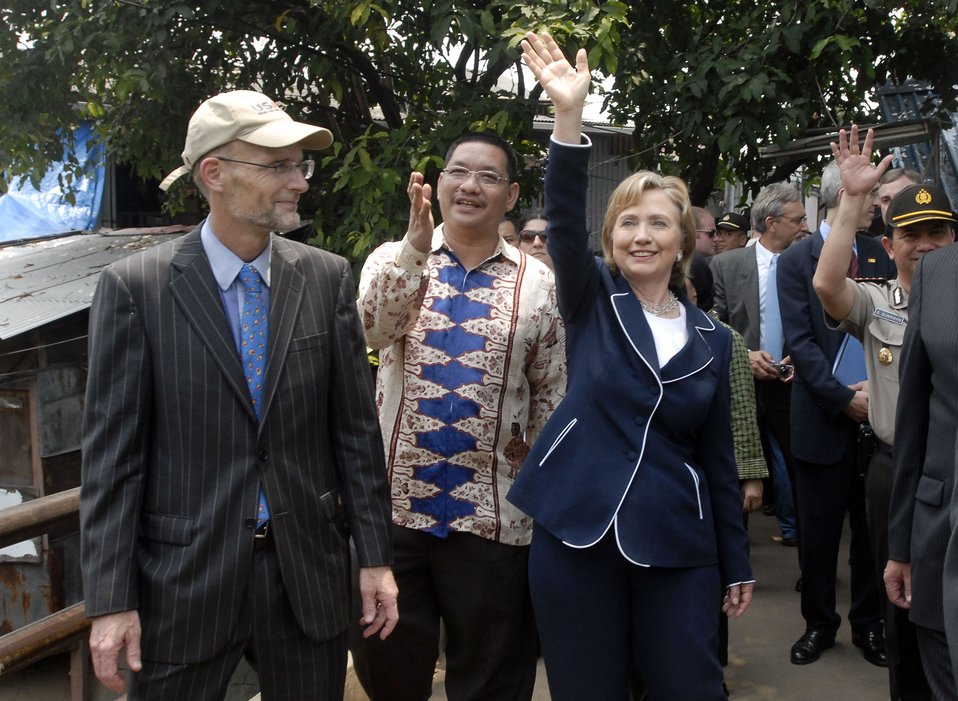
Secretary Clinton Walks Through walk through Petojo Utara Neighborhood

USAID Director, Mr. Walter North (left), Mr. Irwansyah (center) and Secretary Clinton walk through the Petojo Utara neighborhood in Jakarta, Indonesia February 19, 2009.